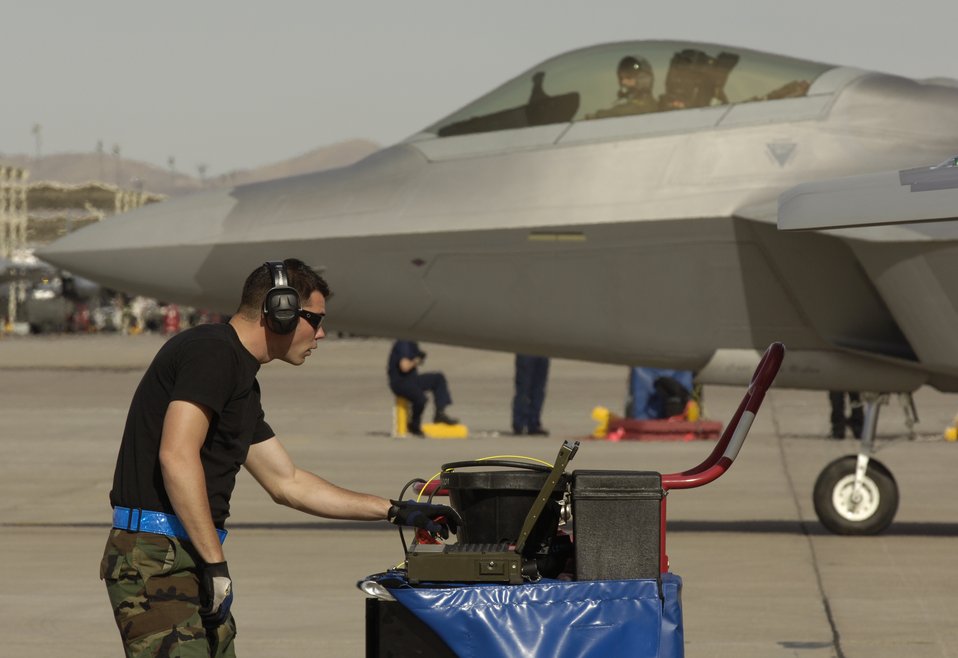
F-22s make mark at Red Flag

Senior Airman William Rotroff reviews F-22 Raptor data on a portable maintenance aid during Red Flag Feb. 6 at Nellis Air Force Base, Nev. The exercise sharpens aircrews' warfighting skills in realistic combat situations. This is the first deployment to Red Flag for the 94th Fighter Squadron with F-22 Raptors. Airman Rotroff is a tactical aircraft maintenance specialist at the 94th FS from Langley AFB, Va.